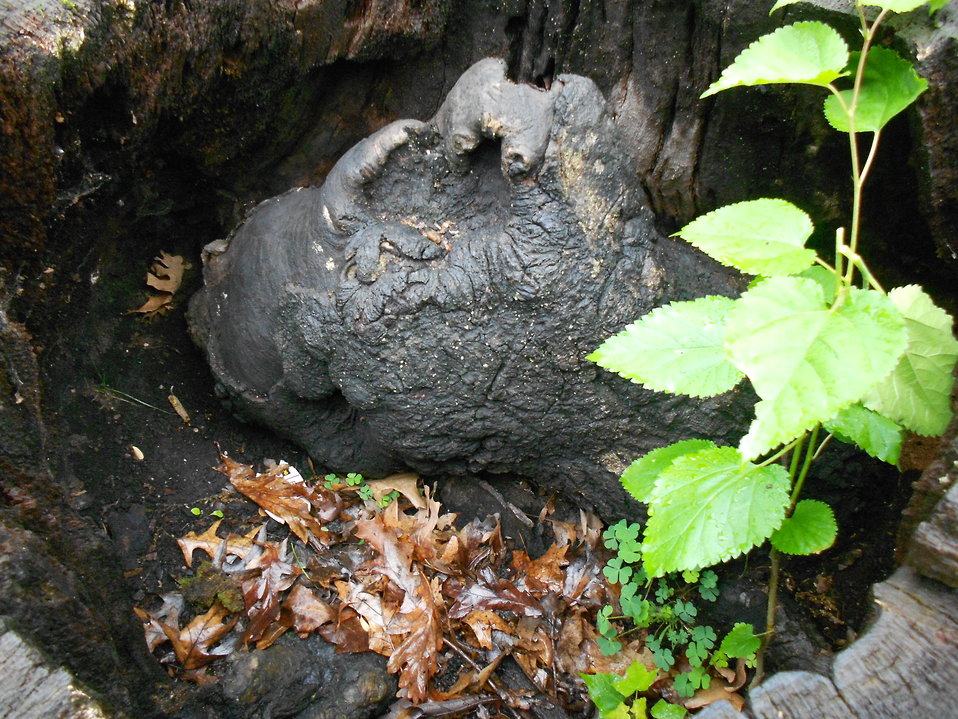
Inside of a stump

Credit: USFWS

'It looked really cool because it can be a frog's home.' -Allison Roberts